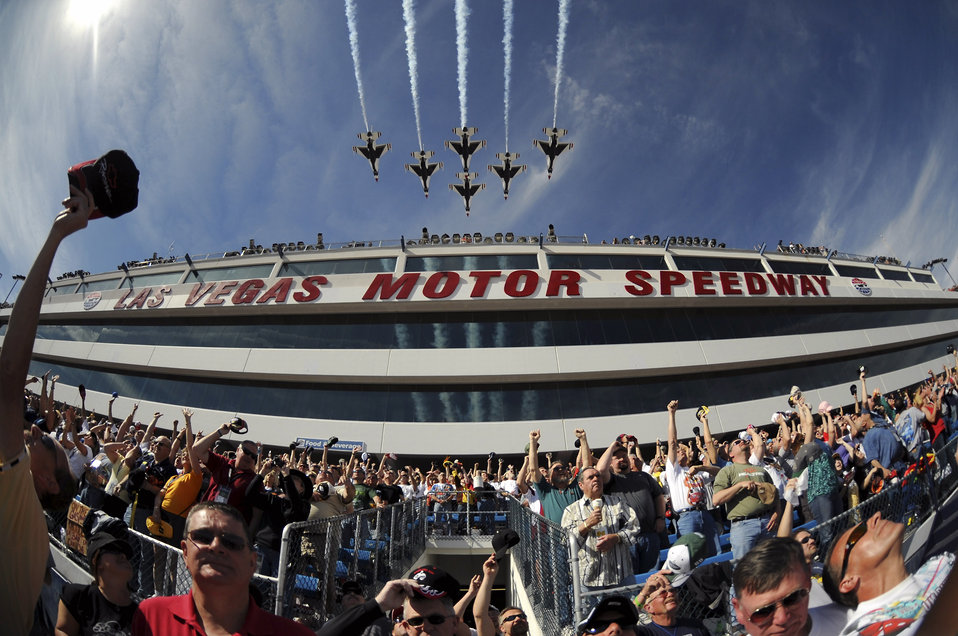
Take a victory lap

The U.S. Air Force Air Demonstration Squadron Thunderbirds fly over the Las Vegas Motor Speedway March 1 during the NASCAR Nextel Cup race. Located at Nellis Air Force Base, Nev., the Thunderbirds will begin their 2009 schedule on March 21.